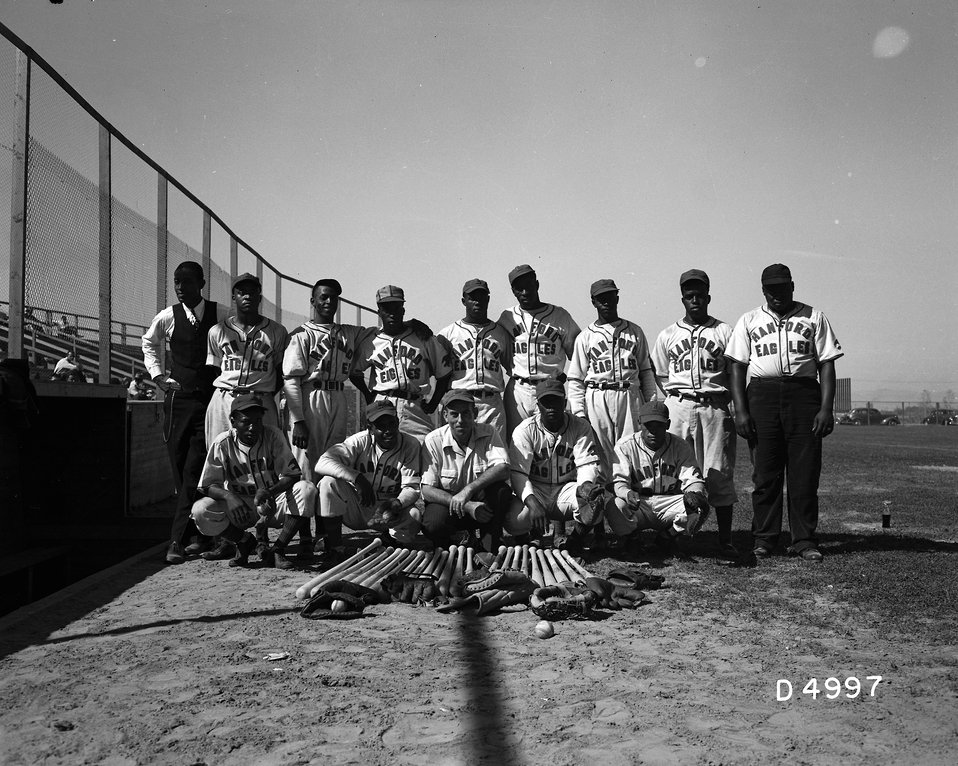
Hanford Eagles Baseball Team

DOE commissioned an exhibit documenting the contributions of African Americans to the Manhattan Project in 2002. The purpose of the exhibit was to commemorate the role of African Americans to the Manhattan Project by way of the Hanford Reservation. The exhibit consists of pictures taken from the Hanford archives and oral histories of African American working at the Hanford starting with wartime emergency construction in 1943, through operations, cold war expansions, and mission diversification.